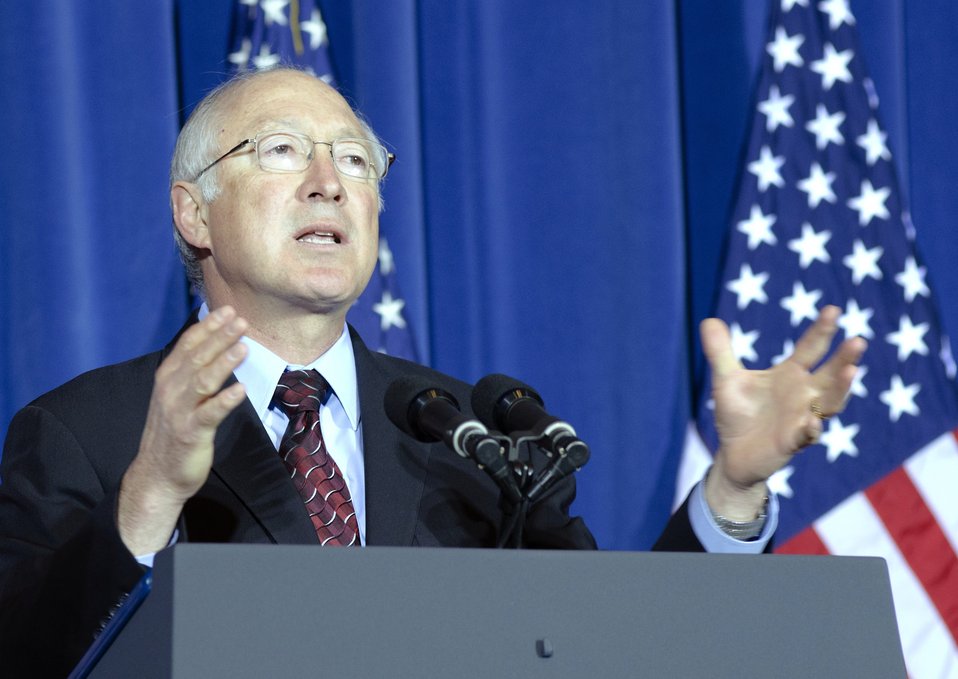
Interior Secretary Ken Salazar made opening remarks at the White House Conservation Summit “Growing America’s Outdoor Heritage and Economy” held at the Interior Department in Washington, D.C., on Friday, March 2, 2012. This conference was part of President Barrack Obama’s, “America’s Great Outdoors Initiative” to spotlight community-driven conservation efforts and discussed how to build their success.